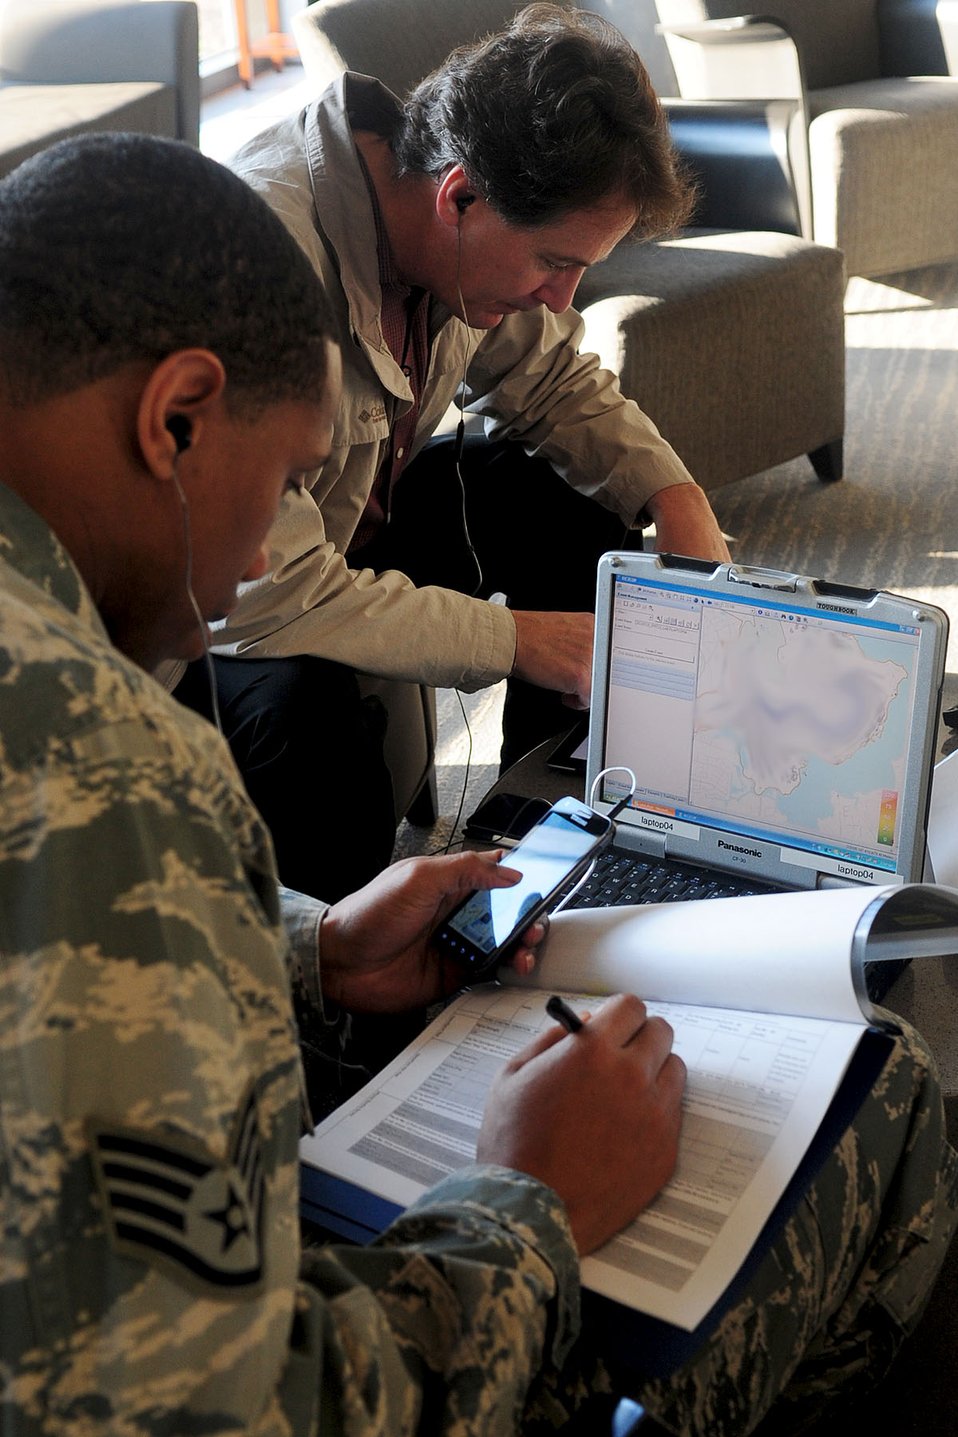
Air Force tests next-gen devices

Staff Sgt. Oris Key, a 633rd Security Forces Squadron patrolman, gathers information while Ken Hughes, an Air Force Integrations Center systems engineer, checks the communication range of his cellular phone at Joint Base Langley-Eustis, Va., Jan. 25, 2012. A joint expeditionary force experiment exercise was held to provide better mobile solutions to meet the Air Force’s communication needs.